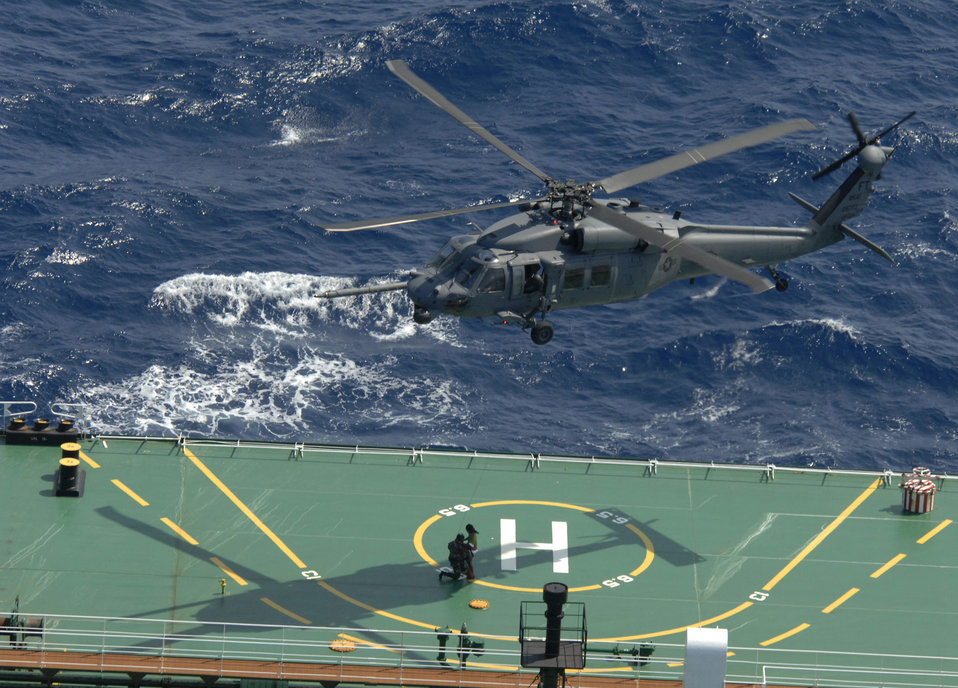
Moody Airmen rescue Cuban migrants found at sea

An HH-60G Pave Hawk from the 41st Rescue Squadron out of Moody Air Force Base, Ga., picks up a 38th Rescue Squadron pararescueman and a survivor off a ship approximately 260 miles south of New Orleans, La., during a rescue mission April 25. Responding to a request for support from the U.S. Coast Guard, two HH-60G Pave Hawk helicopters and a 71st Rescue Squadron HC-130P King performed a 10-hour mission to retrieve Cuban migrants in distress that had been picked up by a passing ship. Subsequently, five adults and one child were hoisted from the tanker and transported to a medical facility in New Orleans.